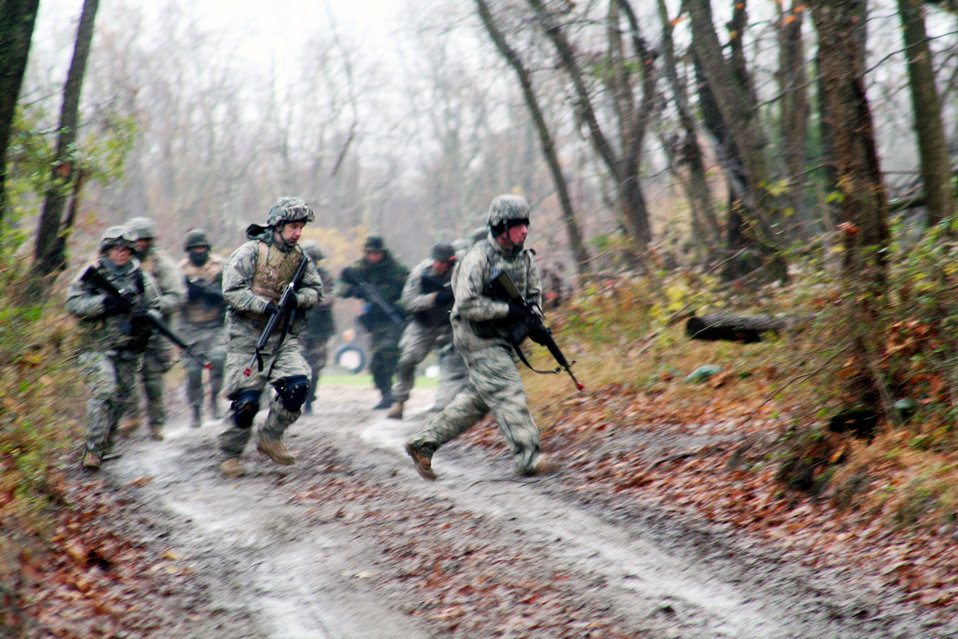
Deploying Airmen practice patrol tactics

Students in the Combat Airman Skills Training Course 10-1A leave the trail to practice dismounted patrolling tactics during course training Nov. 12, 2009, at a range on Joint Base McGuire-Dix-Lakehurst, N.J.